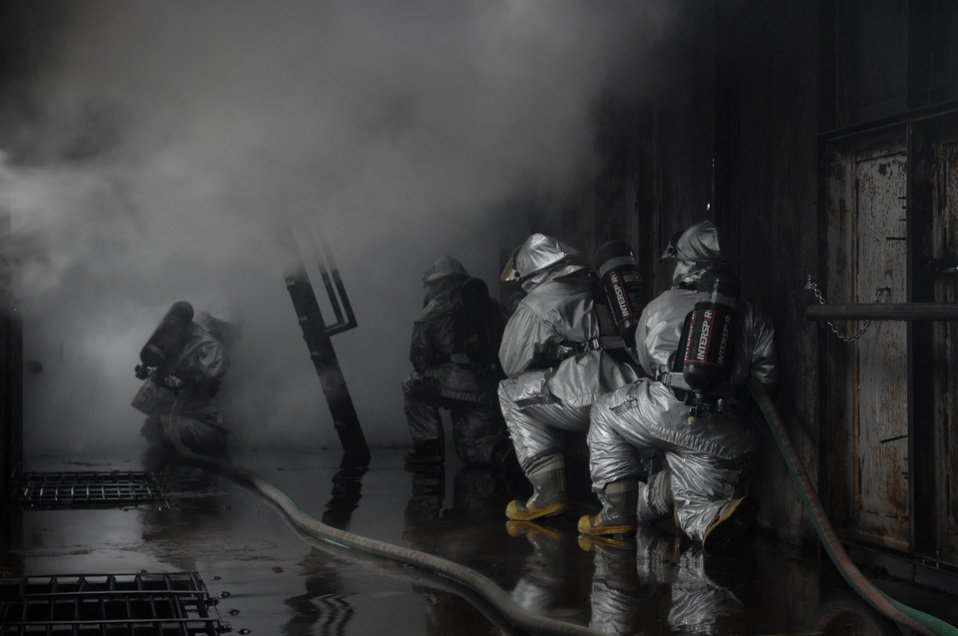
Battling the heat

48th Civil Engineer Squadron firefighters are surrounded by steam as they extinguish a simulated cargo fire March 8 at Royal Air Force Mildenhall, England. Firefighters must train constantly to stay proficient in their aircraft rescue and firefighting skills.